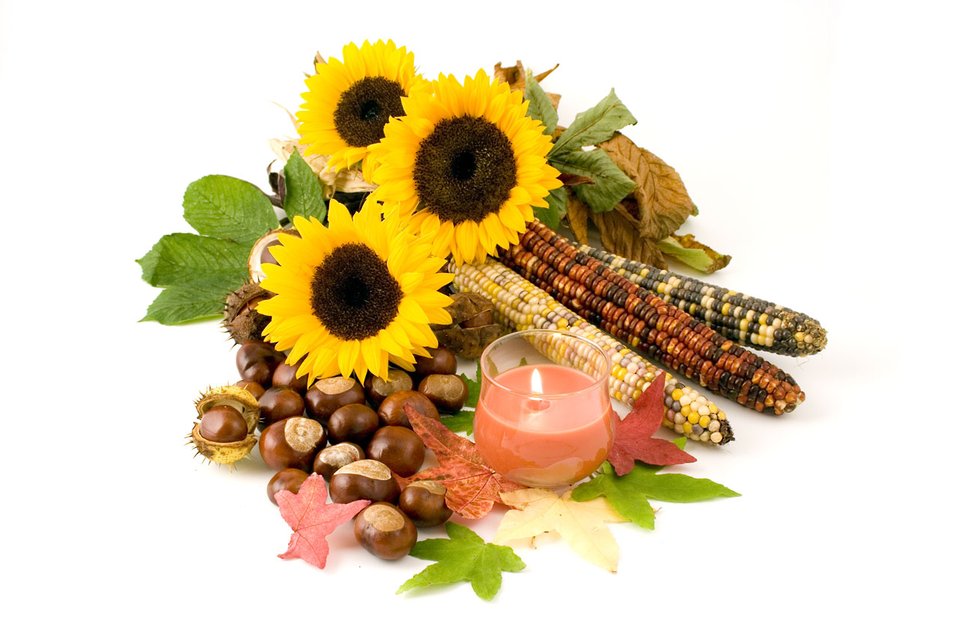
Autumn still life on white background.